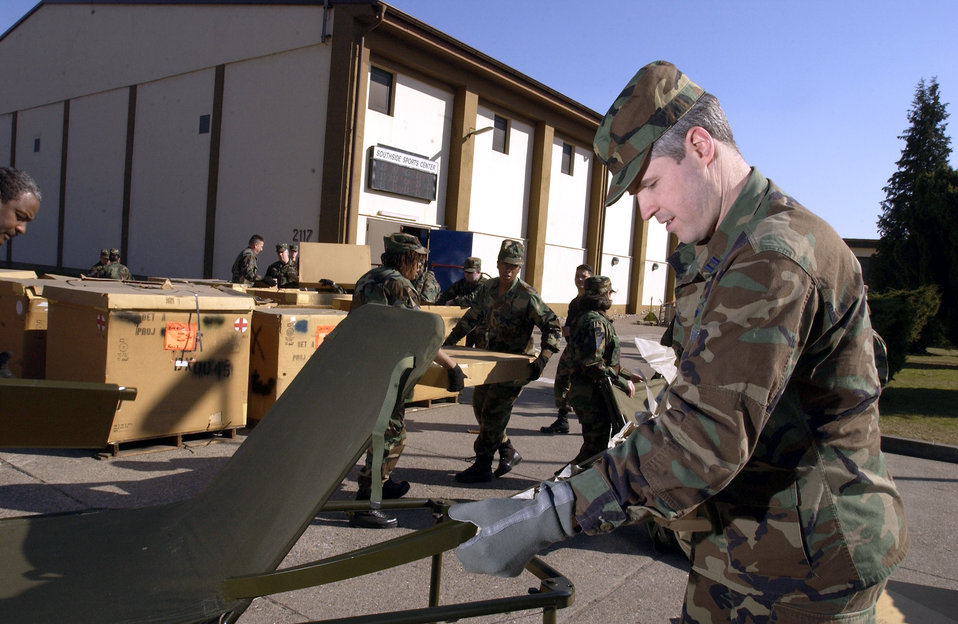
Rowland

RAMSTEIN AIR BASE, Germany -- Reserve Capt. Sean Rowland, a certified registered nurse anesthetist with the 514th Air Evacuation Staging Squadron, McGuire Air Force Base, N.J., assembles one of many field litter beds that will be placed in Ramstein's southside gym.